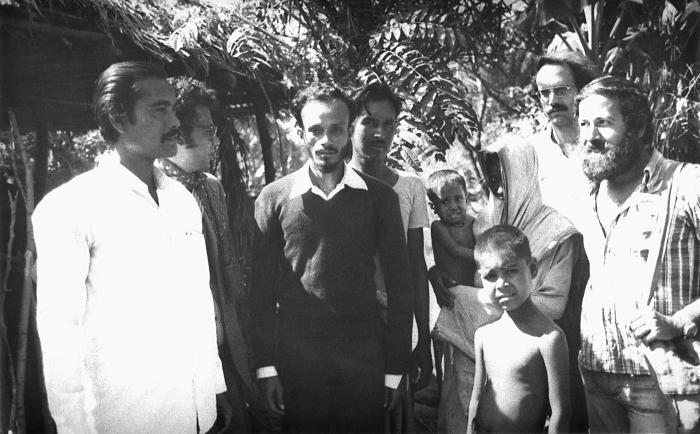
This 1975 photograph depicted a multinational group of smallpox eradication team members including local Bangladesh volunteers, one of whom, standing at the far left, a man named Shahabuddin, who was one of the best Smallpox Surveillance Team leaders involved in the smallpox eradication efforts. Also present, was the bearded man standing at the far right, who was a World Health Organization, WHO, epidemiologist and team leader, and the photographer responsible for many of these historic eradication campaign pictures, Pierre Claquin, M.D., B.A.C.